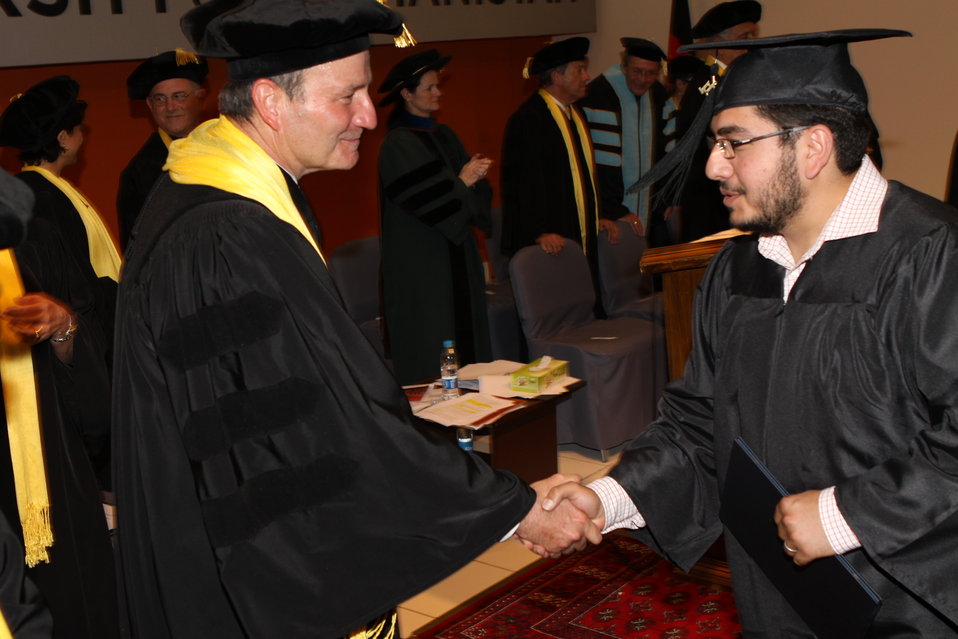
100526 AUAF Graduation 304